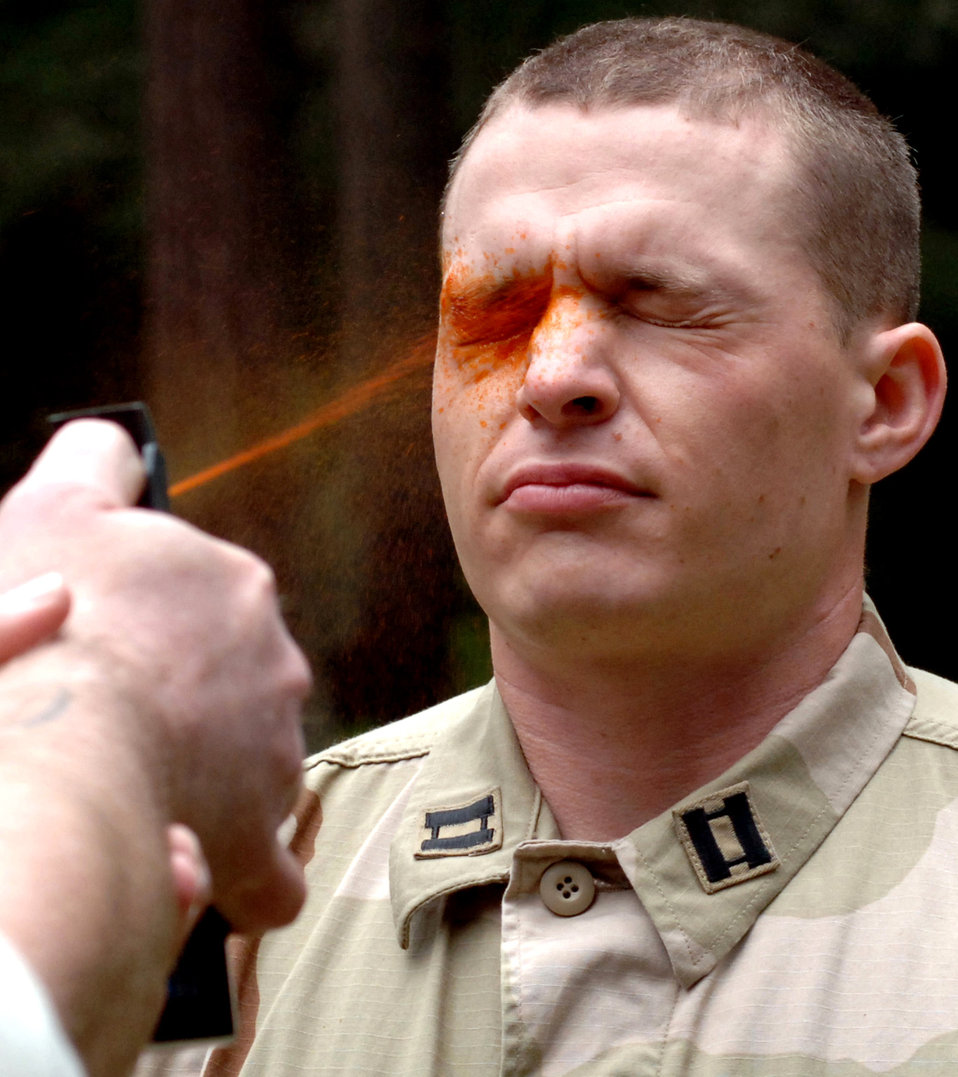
Detainee training operations teach survival skills

Capt. David Celeste gets sprayed with pepper-spray prior to running an obstacle course during detainee training operations on April 25, 2006, at Fort Lewis, Wash. Airmen must navigate the course and take down a